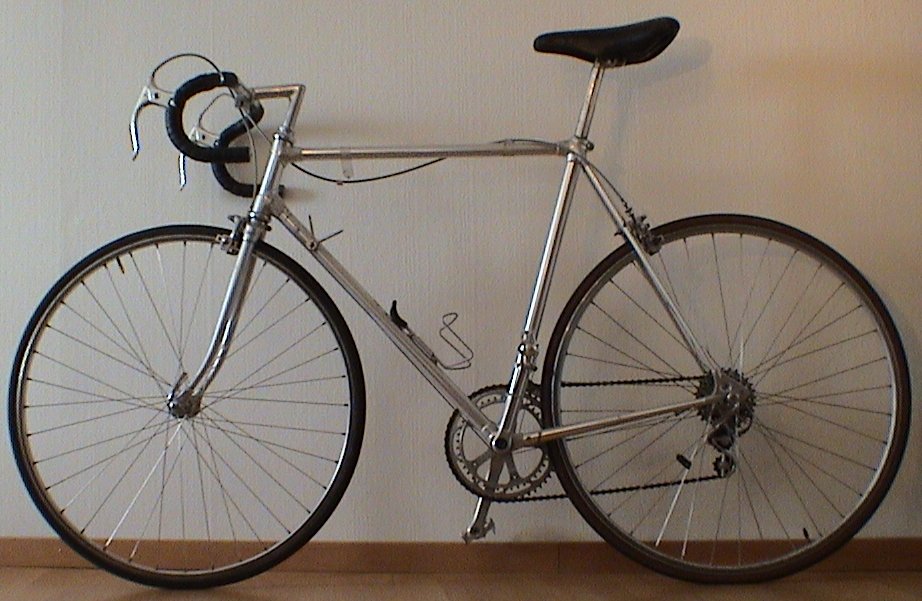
Deutsch: Rennrad, ehemals im Besitz von Ralf Hütter Photograf: Stephan Pleines (eigenes Photo) Photographer: Stephan Pleines (Stephan Pleines 16:42, 6 March 2006 (UTC))
Date: 05.03.2006
This bicycle was formerly owned by Ralf Hütter.